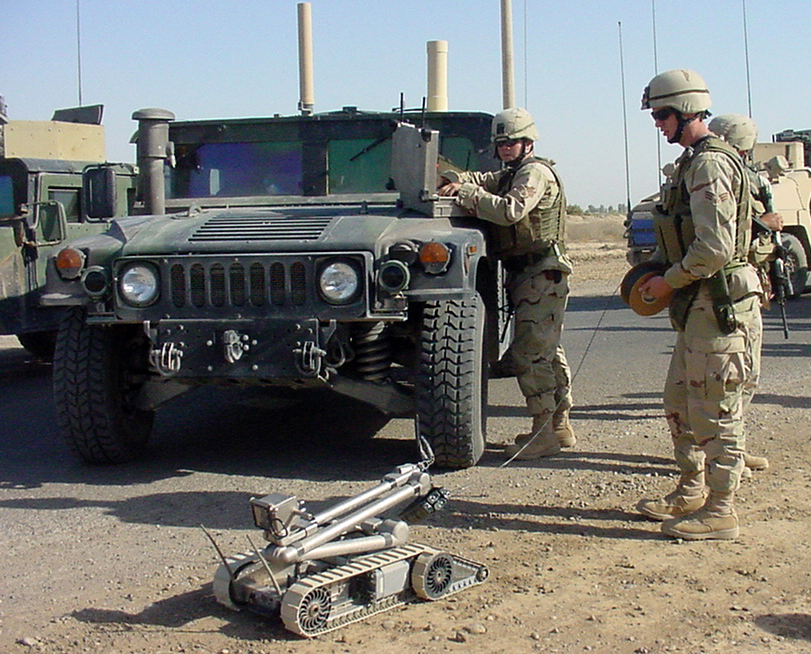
EOD destroy IED

Senior Airmen David Besse and Justin Voorhees, 332nd Expeditionary Civil Engineer Squadron explosive ordnance disposal flight, prepare to destroy explosives using a remote controlled robot.